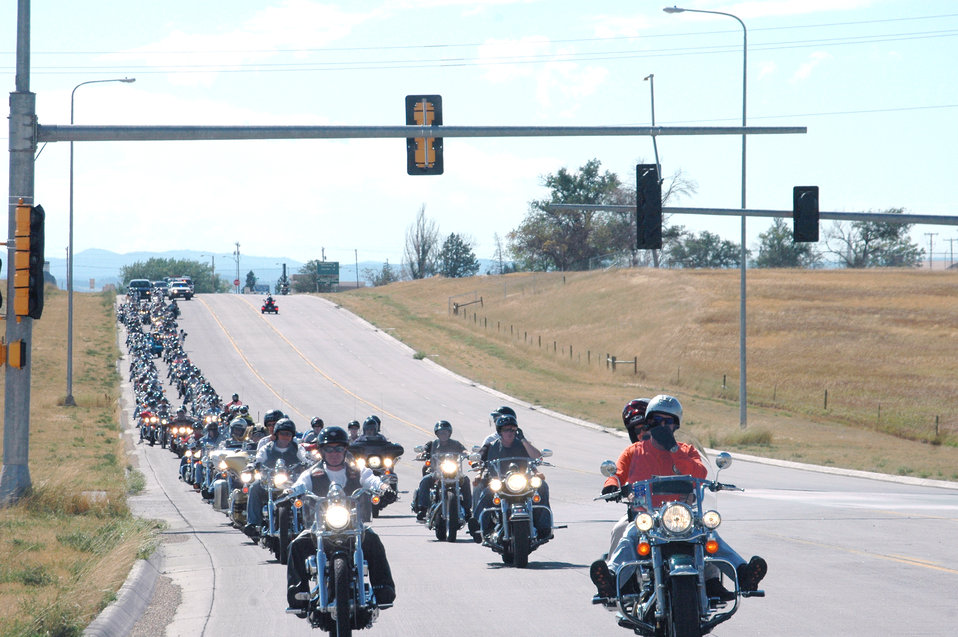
Thunder rolls

Nearly 200 riders from the Ellsworth Dakota Thunder Motorcycle Club begin their ride on Aug. 8 from Ellsworth Air Force Base, S.D., to the 66th Annual Sturgis Motorcycle Rally. Members of the motorcycle club had the opportunity to visit a static display of a B-1 Lancer at Ellsworth AFB that day before leaving for their trip. The annual Sturgis rally lasts through Aug. 13.